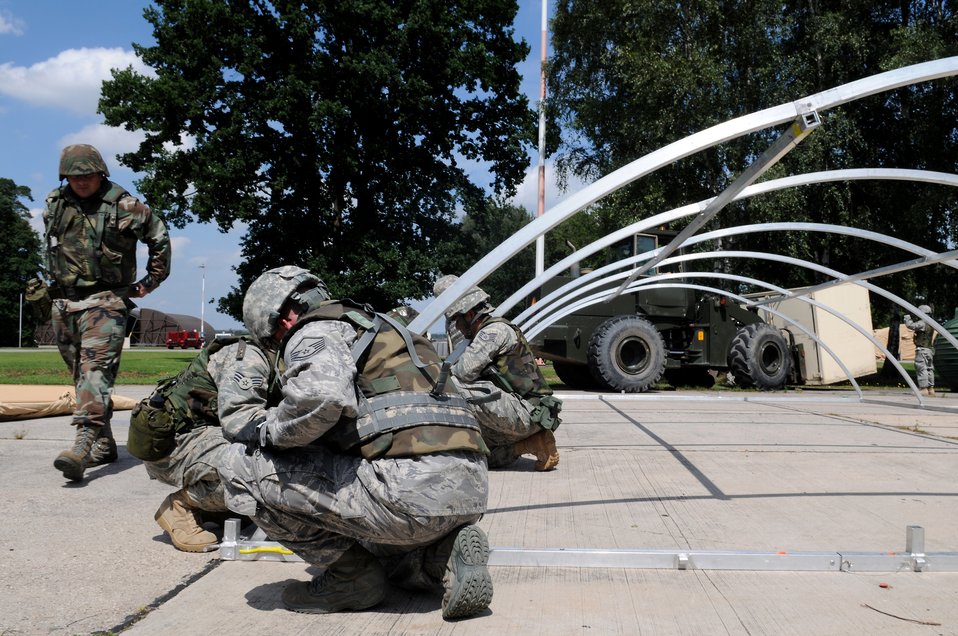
Silver Flag Exercise

Airmen work together to build a small shelter system Aug. 1 during Silver Flag, a week-long training exercise at Ramstein Air Base, Germany. Silver Flag gives participants the basic contingency skills to set up a bed-down operation anywhere in the world.